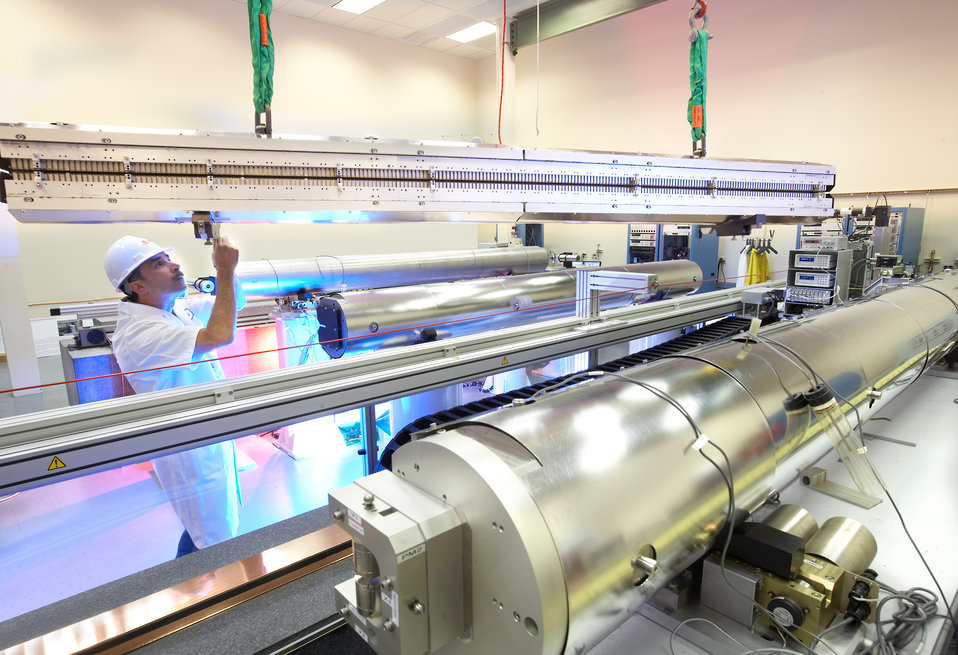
Ralph Colon inspects one of the 33 undulator magnets designed for SLAC Linac Coherent Light Source.
The LCLS offers researchers the first-ever glimpse of high energy or 'hard' x-ray laser light produced in a laboratory. It will provide the world's brightest, shortest pulse of laser x-rays for scientist study. It will give scientists an unprecedented tool for studying and understanding the arrangement of atoms in materials such as metal, semiconductors, ceramics, polymers, catalysts, plastics and biological molecules, with wide-ranging intact on advances energy research and other fields.